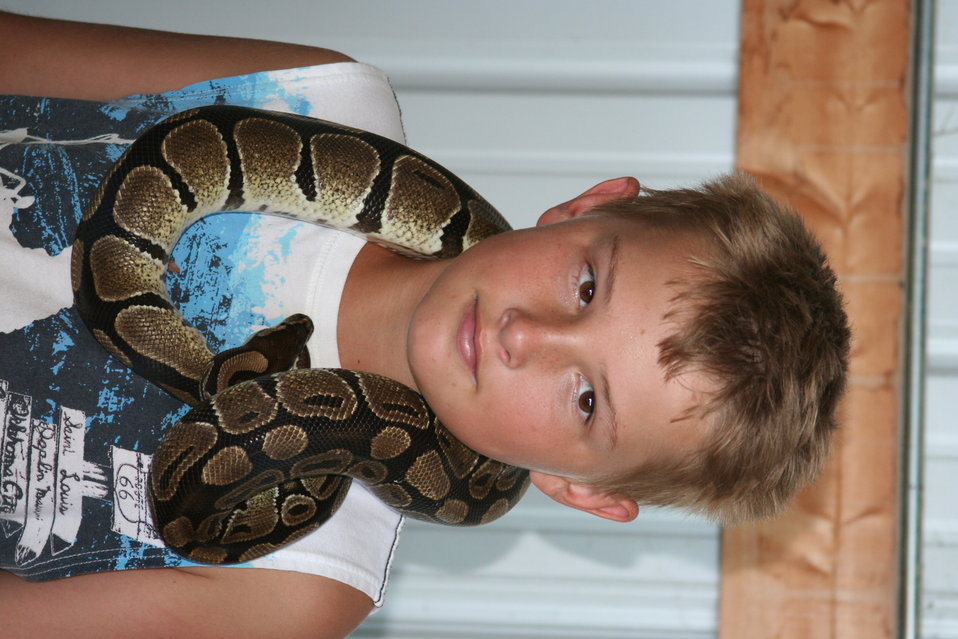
2011 Huron Prairie Fest